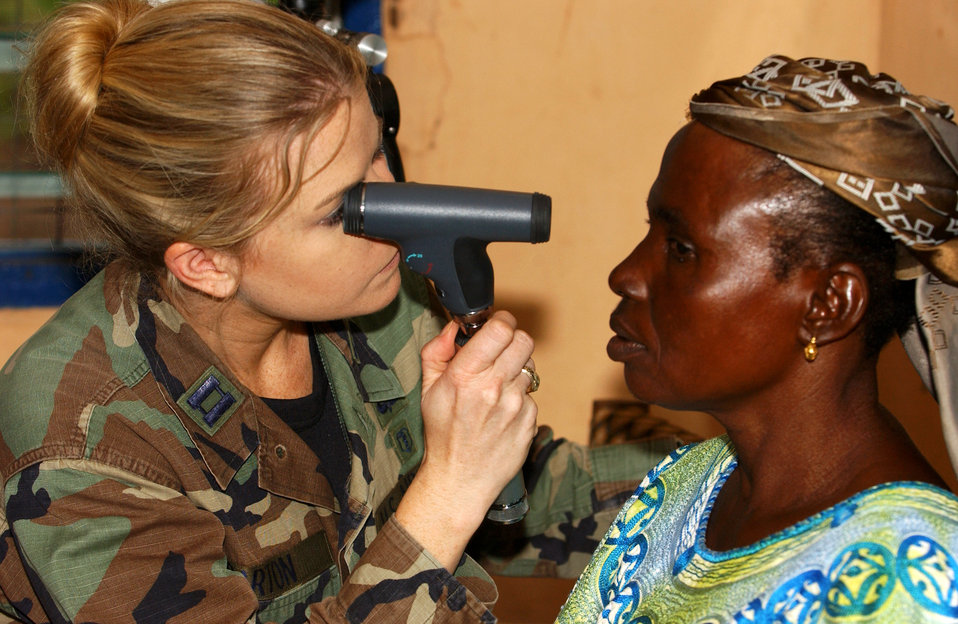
New command may change USAFE's role in Africa

Capt. Christie Barton examines a woman's eyes for cataracts during MEDFLAG 2006 in September in Tamale, Ghana. MEDFLAG is one of the many humanitarian missions Airmen from U.S. Air Forces in Europe have participated in. Captain Barton is a clinical nurse with the 52nd Medical Group at Spangdahlem Air Base, Germany.